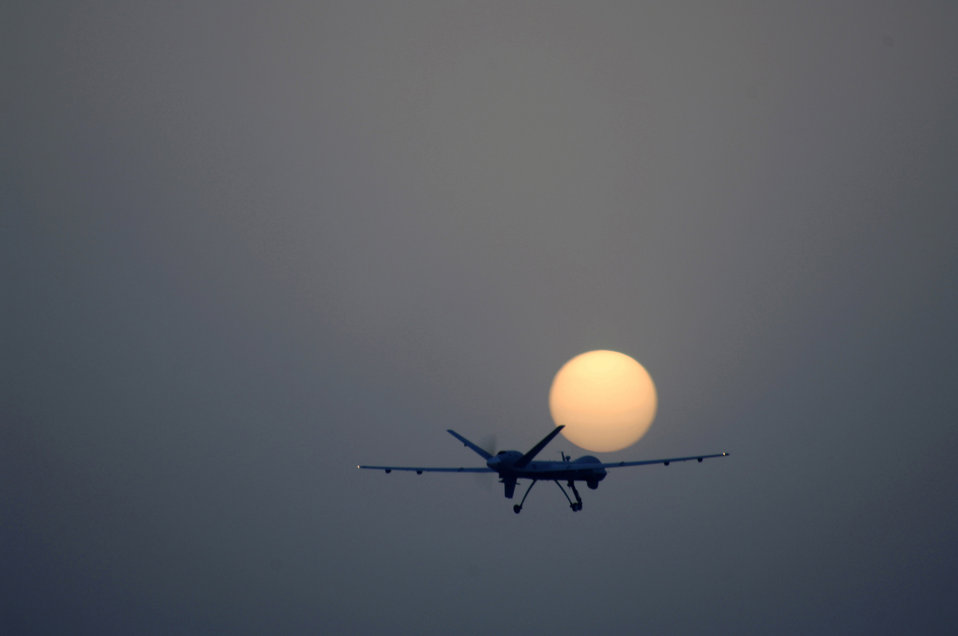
Reaper patrols Iraq sky

An MQ-9 Reaper remotely piloted aircraft takes off July 17 from Joint Base Balad, Iraq. The Reaper can loiter over battlefields or targets for hours at a time without refueling and carries up to 3,750 pounds of laser-guided munitions, giving ground commanders unprecedented situational awareness and the ability to bring the right amount of force to bear on a target. The Reaper, deployed from Creech Air Force Base, Nev., flew its first combat mission over Iraq July 18.